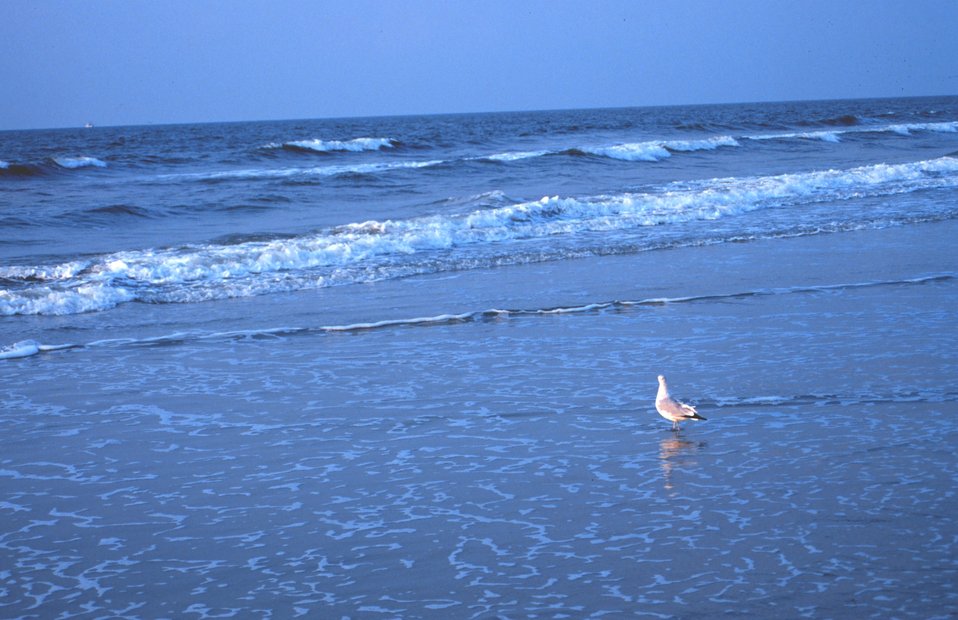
A seagull wading in the surf near the Edwin S. Taylor Fishing Pier